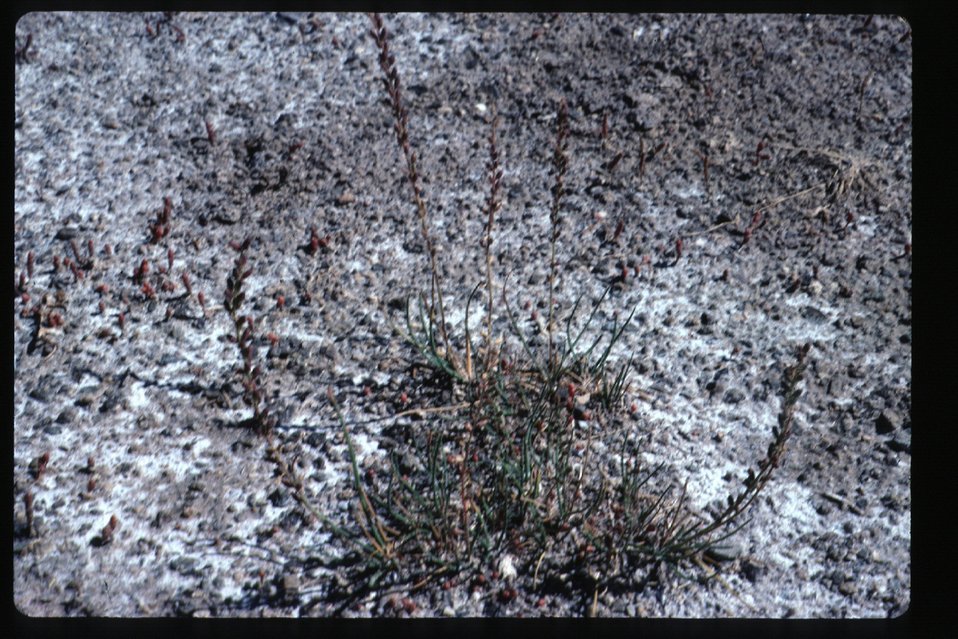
Arrow Grass Triglochin palustre Brush, grasses Wildflowers